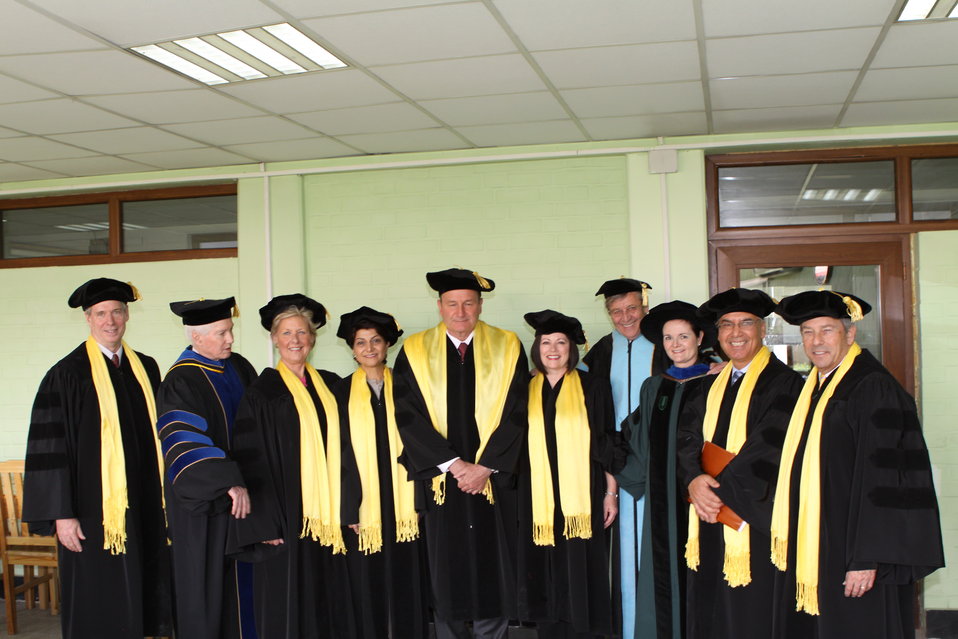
100526 AUAF Graduation 064